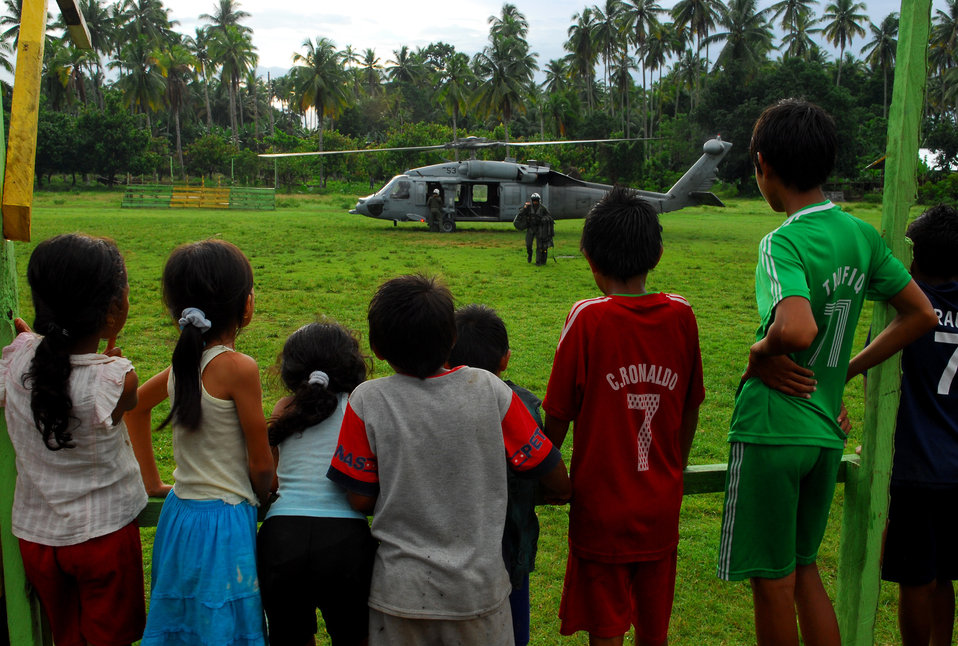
Local Children Watch a Member from Helicopter Sea Combat Squadron 23 “Wild Cards” Carry Float Coats for Passengers

Local children watch as a member from Helicopter Sea Combat Squadron 23 “Wild Cards” carry float coats for passengers after they have visited a medical civic action program in Sofifi, Indonesia, on July 20, 2010. The Military Sealift Command hospital ship USNS Mercy (T-AH 19) is in the North Maluku Islands conducting Pacific Partnership 2010, the fifth in a series of annual U.S. Pacific Fleet endeavors conducted in Indonesia as a disaster relief exercise aimed at strengthening regional partnerships.